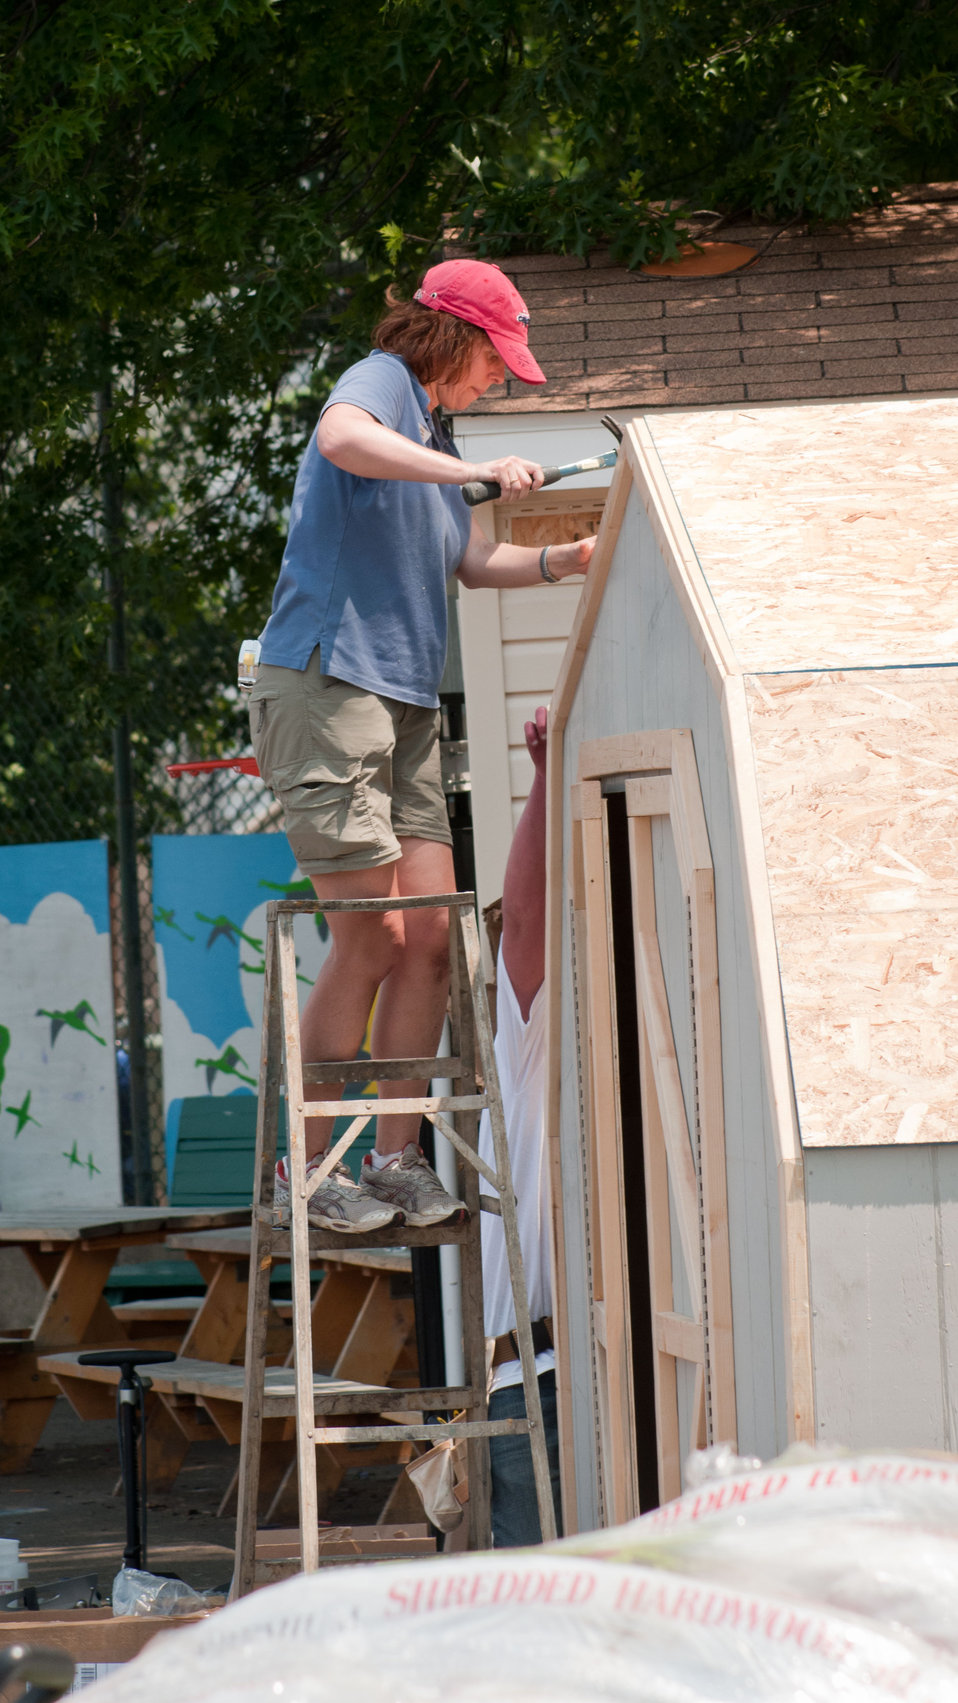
U.S. Department of Agriculture, Agricultural Marketing Service’s Ellen Anderson drives the final nail into a new tool shed for the People’s Garden at William B. Powell Elementary School on Thursday, June 9, 2011 in Washington, DC. Volunteers from U.S. Department of Agriculture People’s Garden Executive Master Gardener program and Washington Capitals hockey organization, along with defenseman Jeff Schultz, and mascot Slapshot transformed a grassy corner of the school playground into a habitat garden and outdoor learning area. Executive Master Gardeners led the volunteer project teams. The Washington Capitals donated new tools; tool shed; garden materials; lunch; most of the volunteers and more. The completed projects included a walking path; tiling of garden plots; planting a bird habitat garden, pollinator garden and native grasses; caterpillar and butterfly plaques; hummingbird and bat house, and tool shed. The garden will later include a picnic area, outdoor classroom, hummingbird garden, Monarch watch garden, native bee garden, and birdbath. USDA challenges its employees to establish People's Gardens at USDA facilities worldwide or on this case, help communities create gardens. People's Gardens vary in size and type, but all have a common purpose - to help the community and the environment.